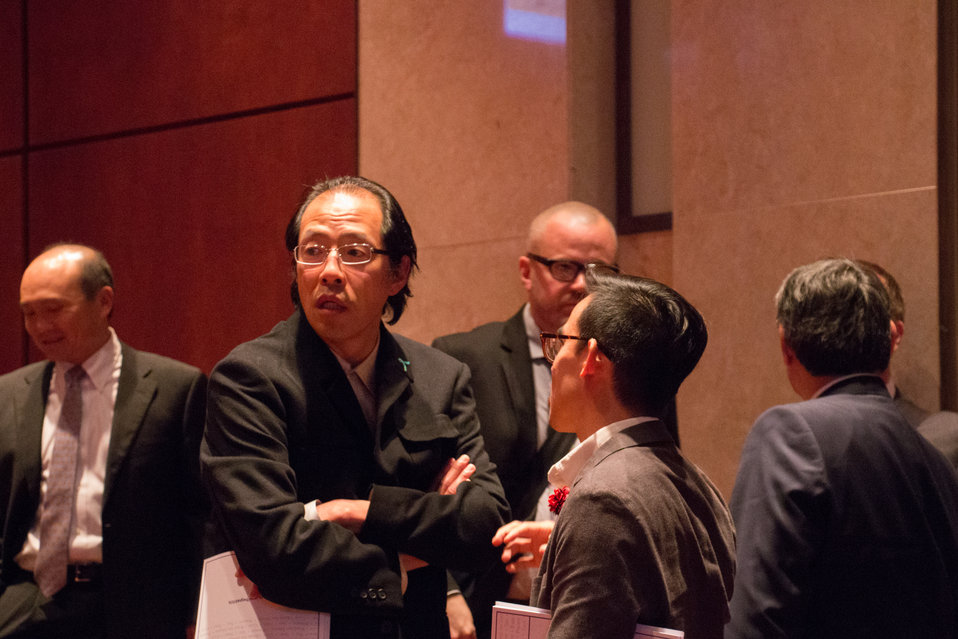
VHAP Launch (386 of 511)